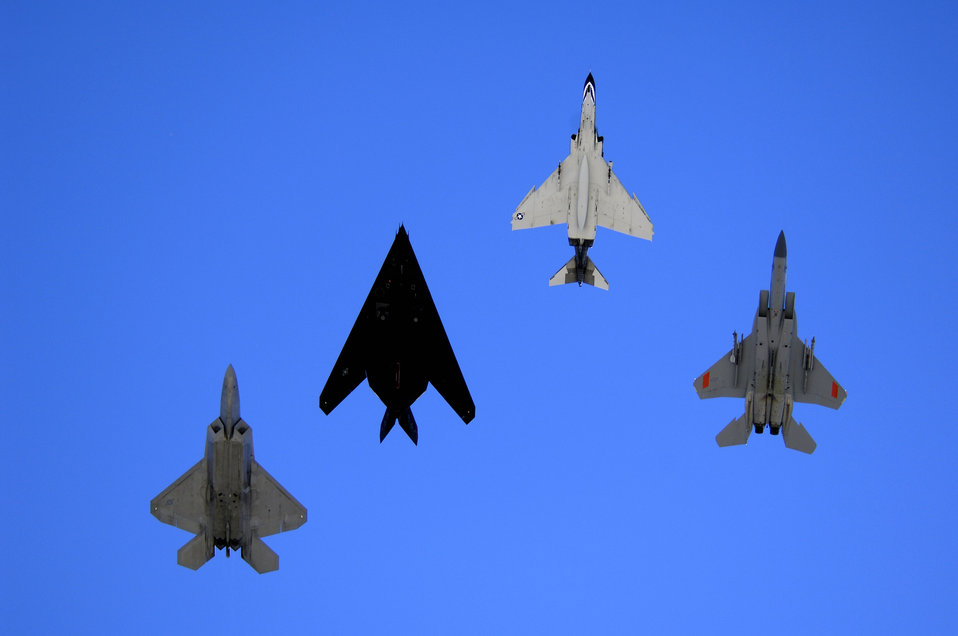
Holloman Air and Space Expo

An F-22 Raptor, an F-117 Nighthawk, an F-4 Phantom and an F-15 Eagle fly over Holloman Air Force Base, N.M. Oct. 27 during the Holloman Air and Space Expo. The expo showcased Air Force capabilities and the 49th Fighter Wing.